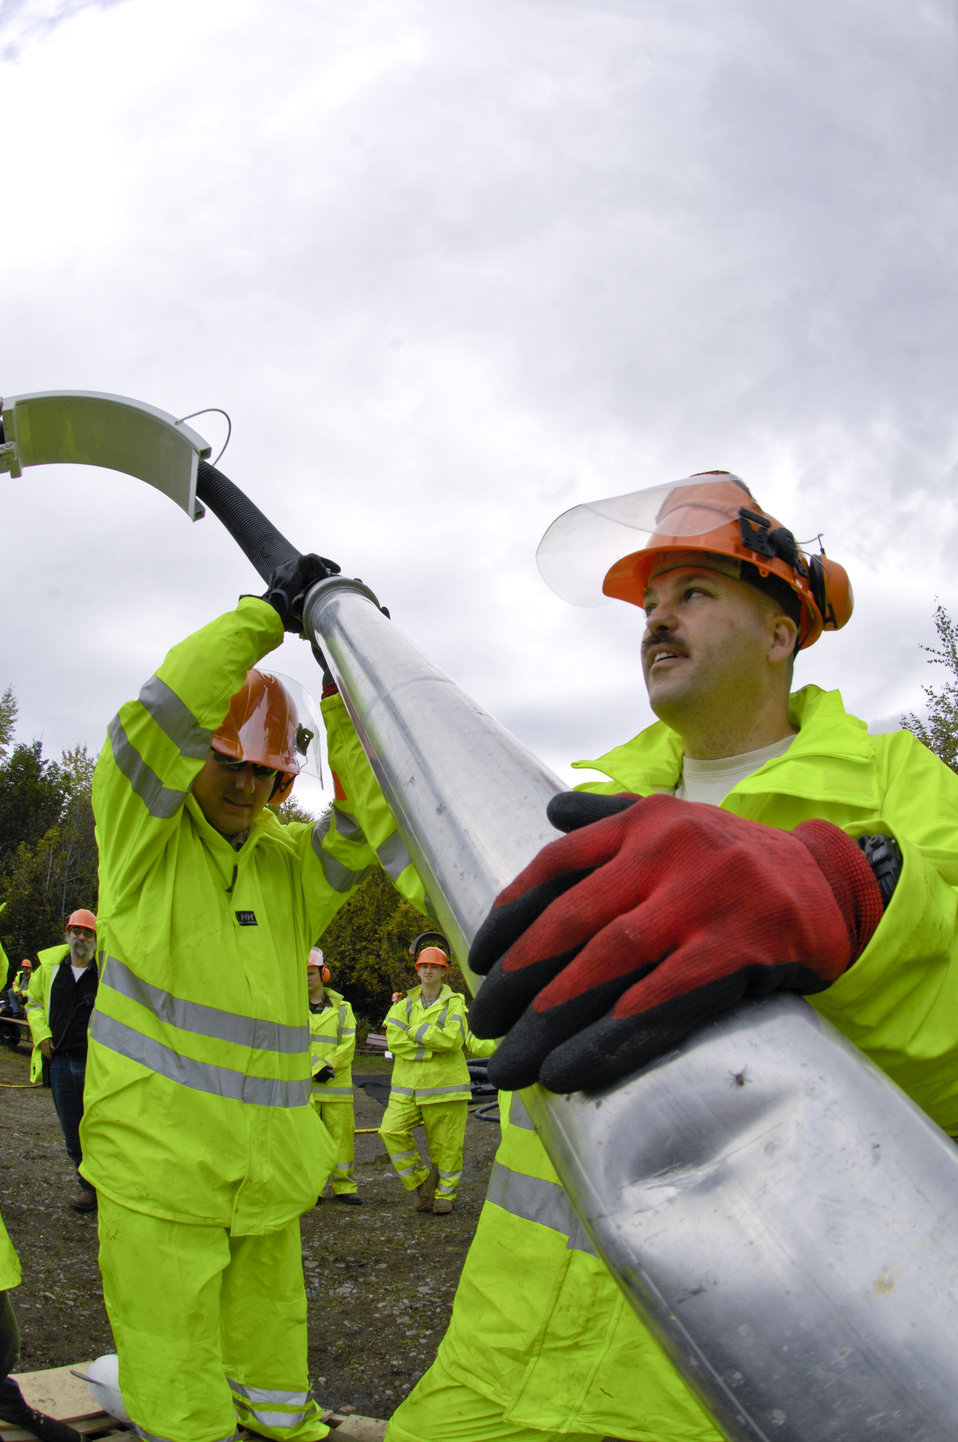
Fall spill drill

ELMENDORF AIR FORCE BASE, Alaska ? Tech. Sgt. Robert Lewallen, 611th Civil Engineer Squadron, and other 611th CES members try to connect a hose extension here Sept. 17. The 611th held its annual Fall Spill Drill Sept. 14-18. The 611th CES is required to do hands-on training twice a year, one which is held in the winter and practiced on thick ice and the second held in the fall before the ice freezes over.